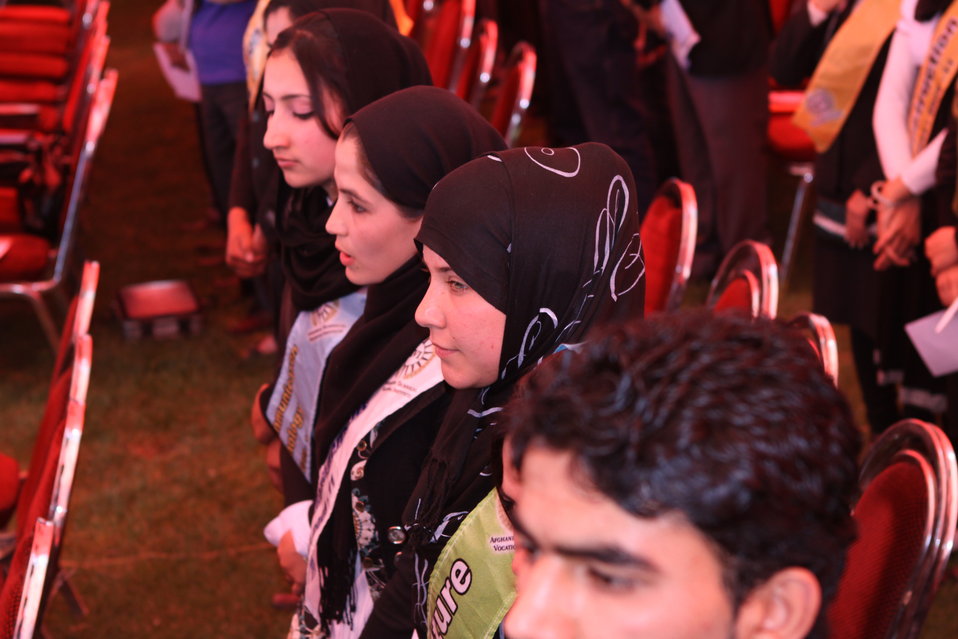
100522 ATVI Graduation 053